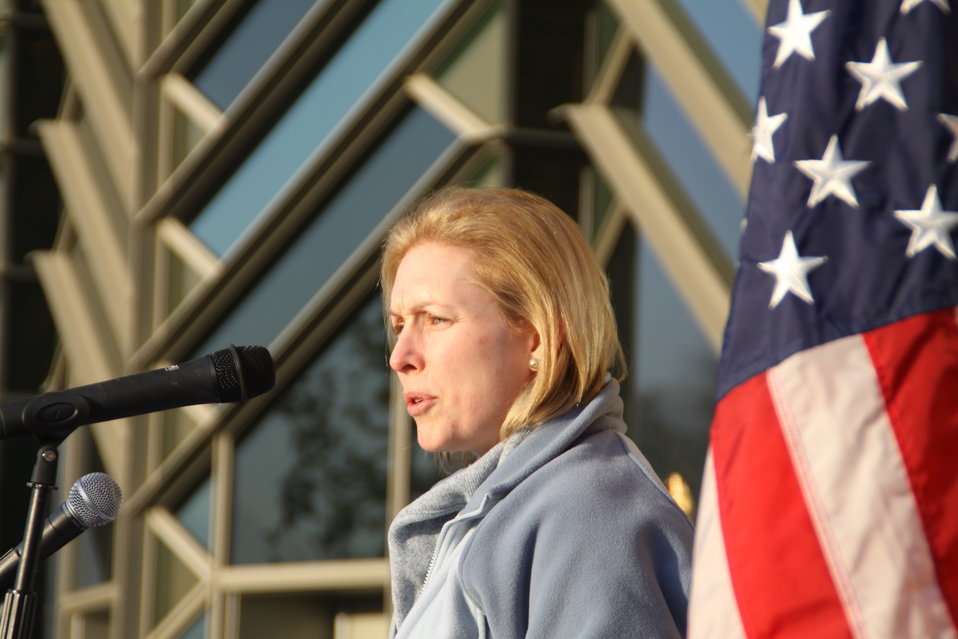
Senator Gillibrand